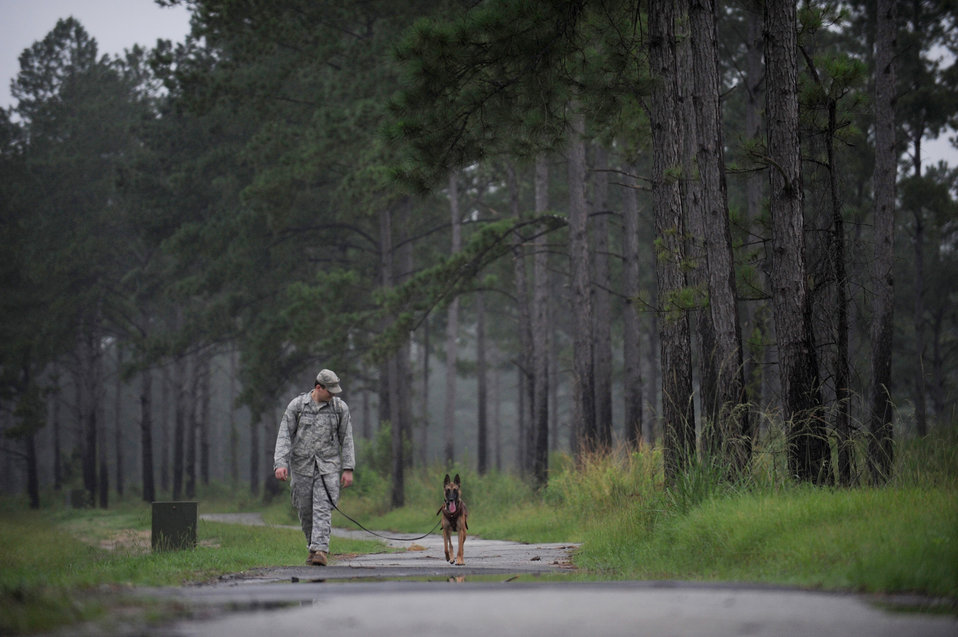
New dog and handler develop bond

Senior Airman Beaun Clegg performs a ruck march with Rreyana July 9 near Moody Air Force Base, Ga. Airman Clegg is in the process of training and building a relationship with Rreyana since her arrival in June from Lackland AFB, Texas. He is a military working dog handler with the 822nd Security Forces Squadron.